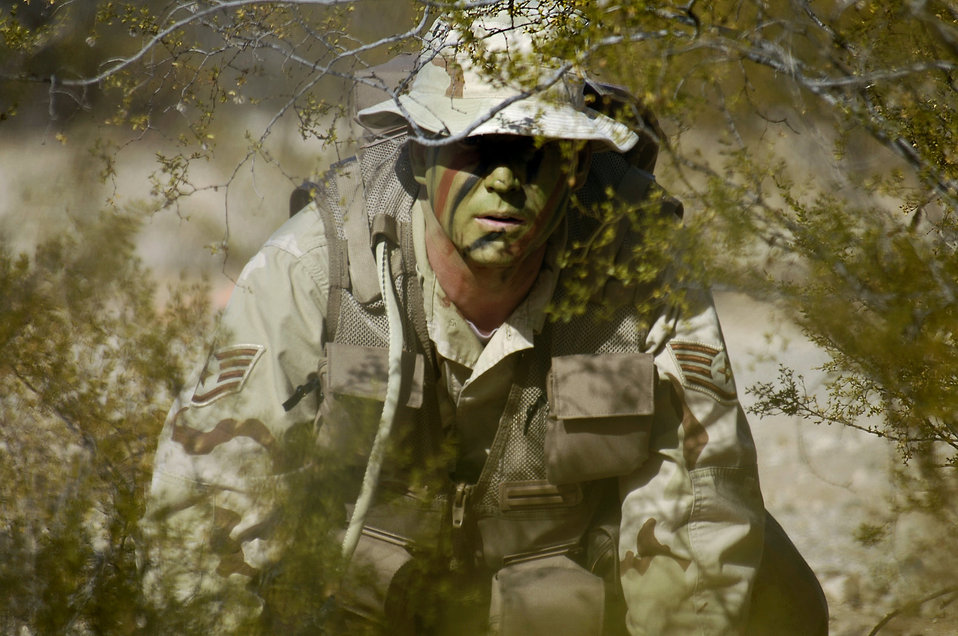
Combat survival training

DAVIS-MONTHAN AIR FORCE BASE, Ariz. (AFPN) -- Staff Sgt. John Waters practices evasion maneuvers during a combat survival training course. The maneuvers are part of survival evasion resistance and escape training taught to pilots and aircrew members. Sergeant Waters is with the 43rd Electronic Combat Squadron.